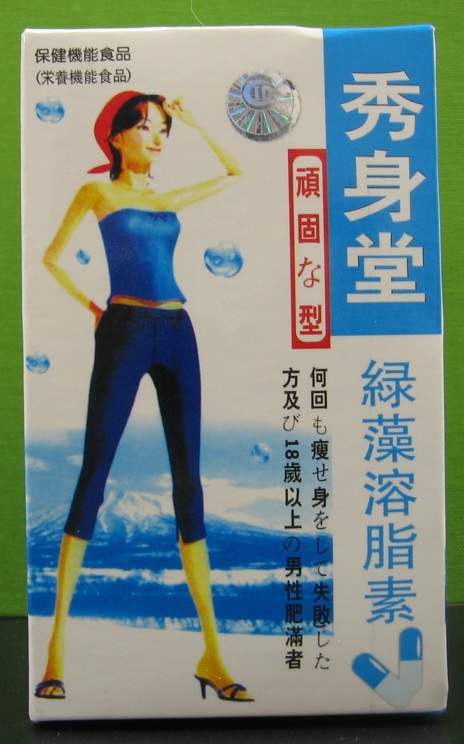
Japan Weight Loss Blue

February 18, 2012 - The FDA is advising consumers not to purchase or use 'Japan Rapid Weight Loss Blue ,' a product promoted and sold for weight loss. The product was found to contain undeclared sibutramine, sibutramine analogs, and ephedrine alkaloids. For more information, go to www.fda.gov/Drugs/ResourcesForYou/Consumers/BuyingUsingMe...

And read this Consumer Update: Beware of Fraudulent ‘Dietary Supplements’